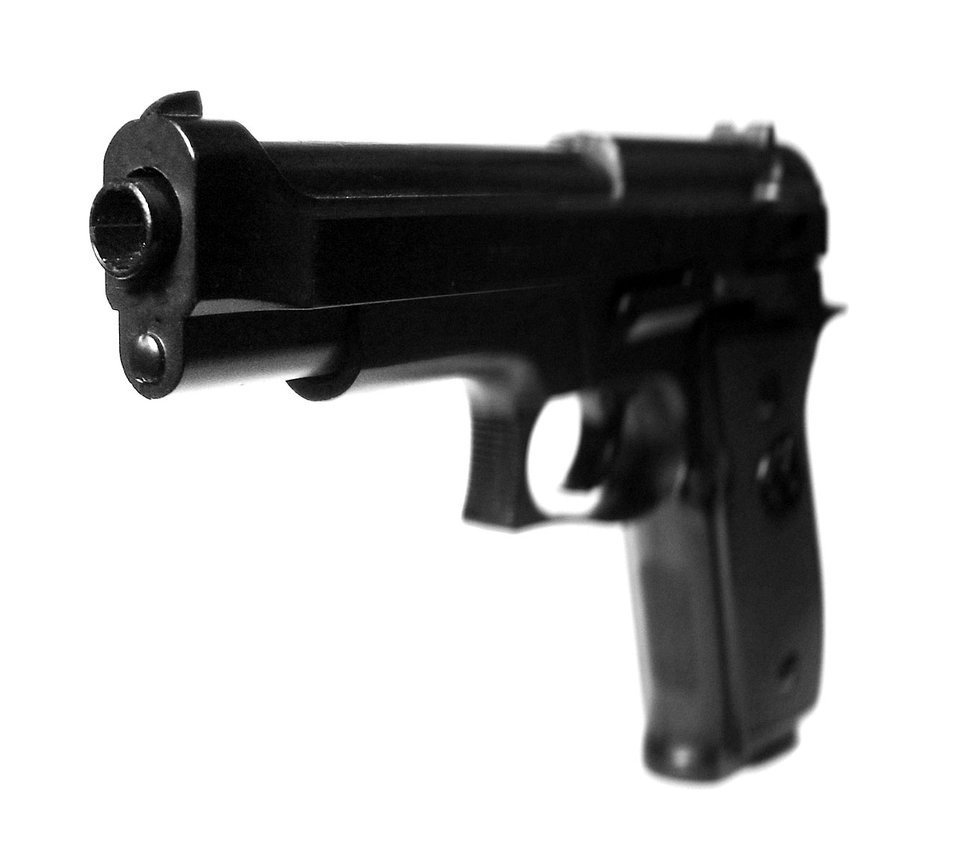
Pistol

Plastic toy gun.